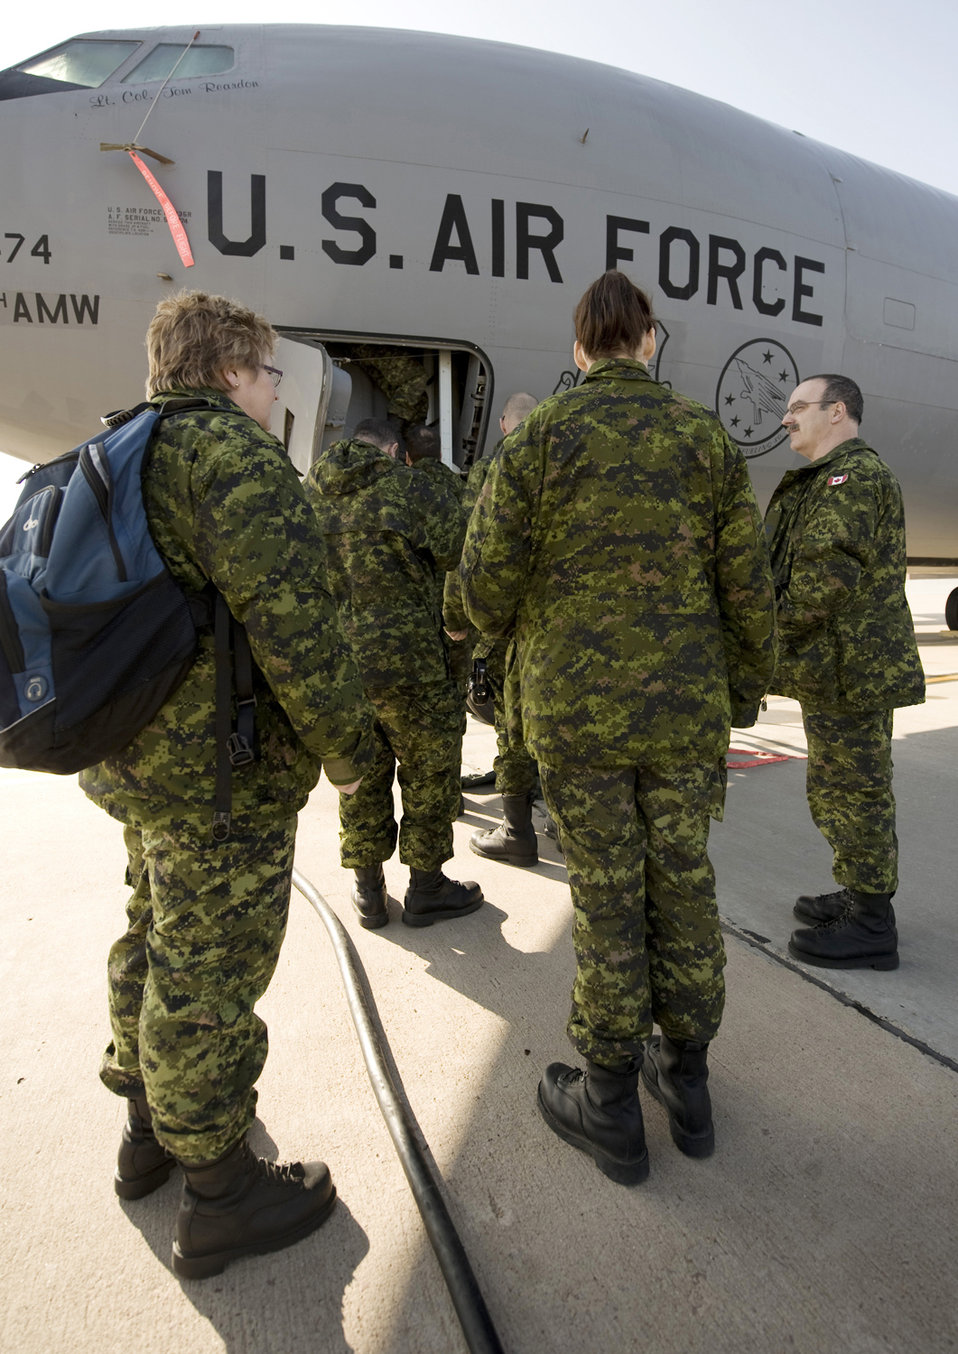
Airmen gain experience while supporting Canadian military training

Members of the Canadian air force's 425th Tactical Fighter Squadron board a KC-135 Stratotanker for an orientation flight March 17, 2010, at Altus Air Force Base, Okla.